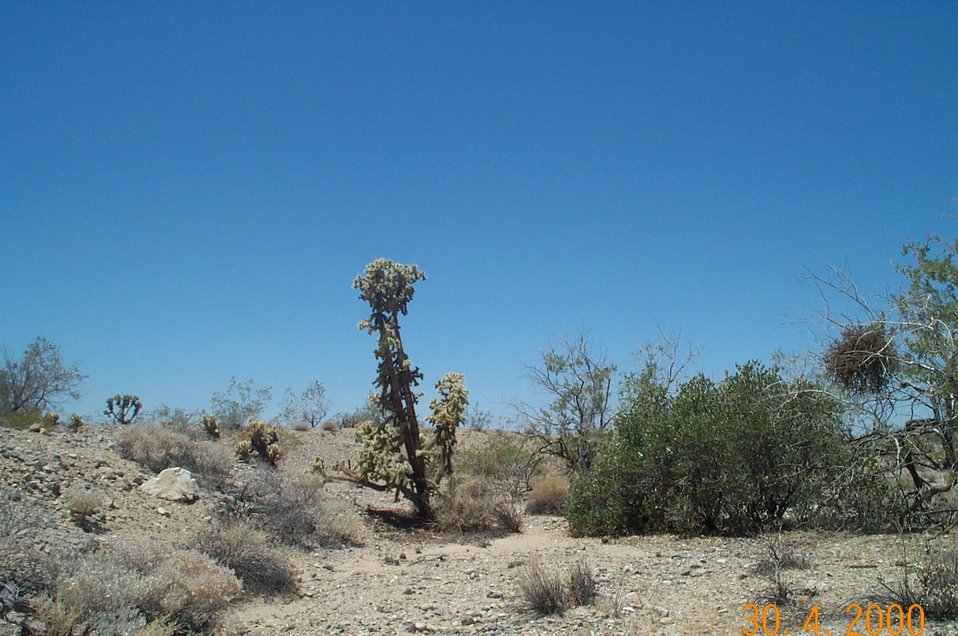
Nine to ten foot tall Munz cholla